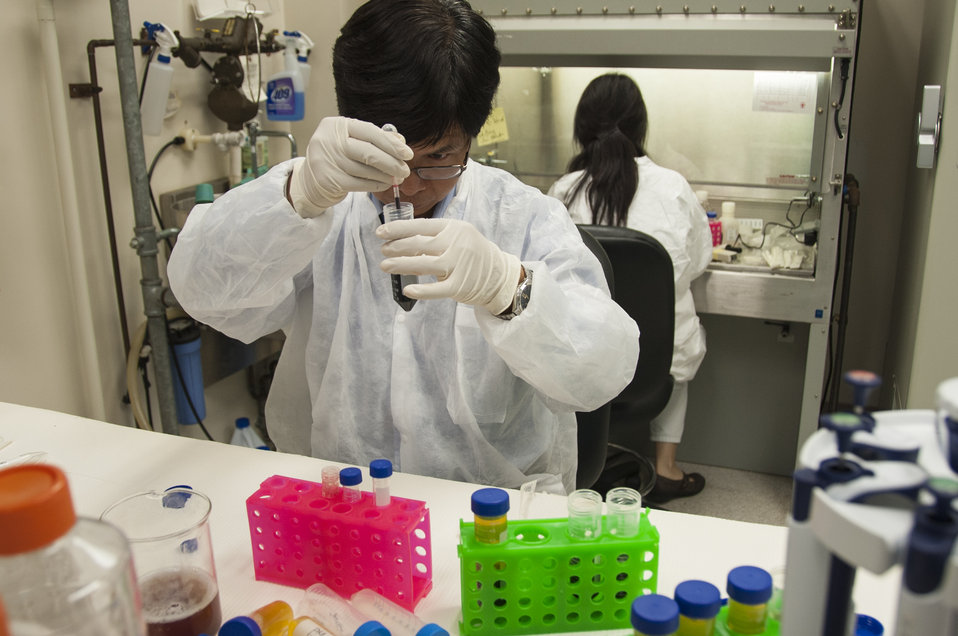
Blood Research: Saving Lives (8541)

ason Liu, Ph.D., a laboratory chief at FDA’s Office of Blood Research and Review, collects white blood cells from processed whole blood. FDA is responsible for the safety of our nation’s blood supply and is at the forefront of evaluating and encouraging innovative technologies for protecting it.

Read this Consumer Update to learn more: Advances in Saving Lives with Blood